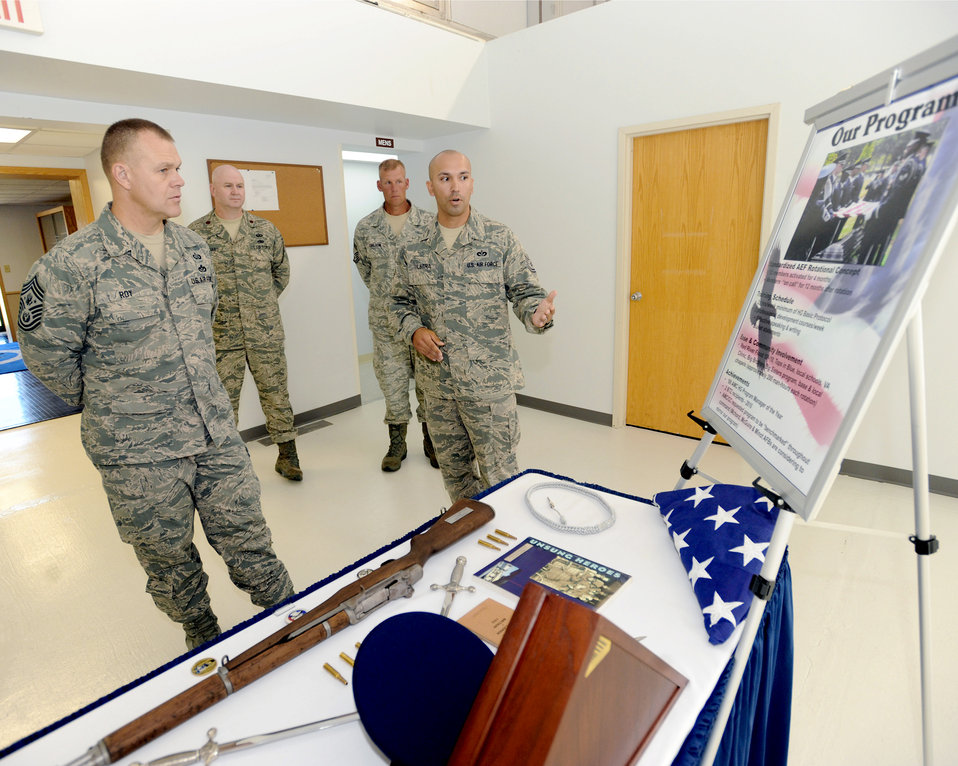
Chief master sergeant of the Air Force visits Grand Forks AFB

Tech. Sgt. Christopher Tilstra, 319th Force Support Squadron, explains the Grand Forks Air Force Base Honor Guard program to Chief Master Sgt. of the Air Force James A. Roy during a base visit July 14 to 16.